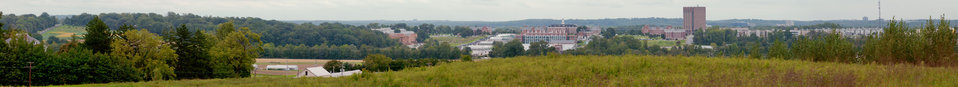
U. S. Department of Agriculture's (USDA), Beltsville Agriculture Research Center was one of the sites visited by the Afghan Ministry of Agriculture's Borlaug Fellows, in Beltsville, MD, on Tuesday, Sept. 21, 2011.